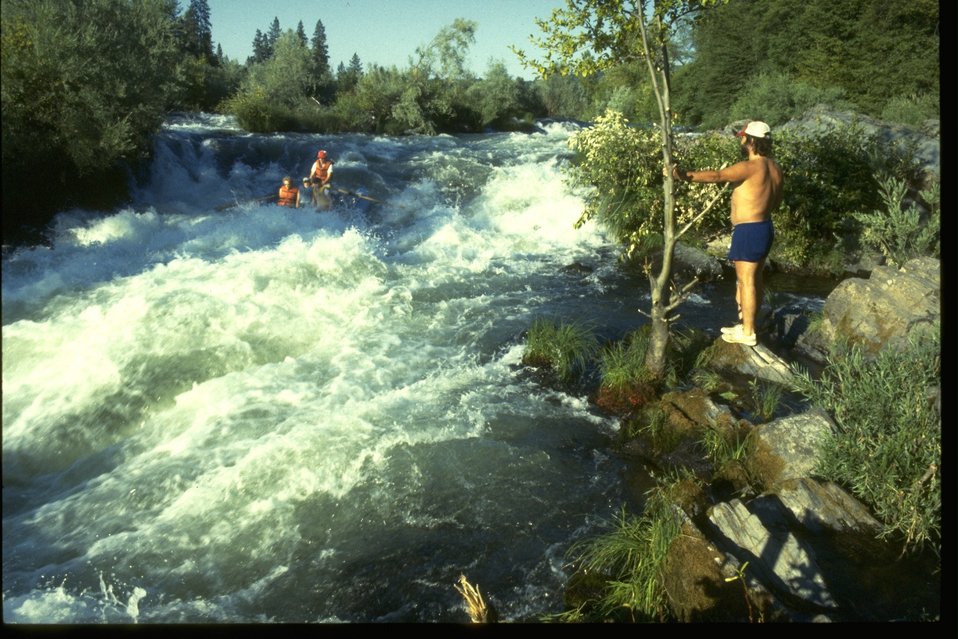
Whitewater rafting at Nugget Falls on the Rogue River.